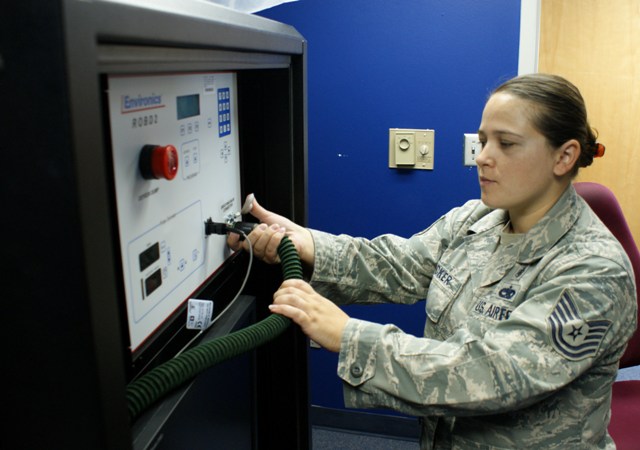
Hypoxia refresher training

Tech. Sgt. Jennifer Flecker performs shut-down protocol on a Reduced
Oxygen Breathing Device at Dyess Air Force Base, Texas, on June 6, 2012. The
ROBD is used during hypoxia refresher training to induce the actual symptoms of oxygen deprivation in aircrew members at higher altitudes. Flecker is the 7th Aerospace Medicine Squadron NCO in charge of Aerospace Operational Physiology,